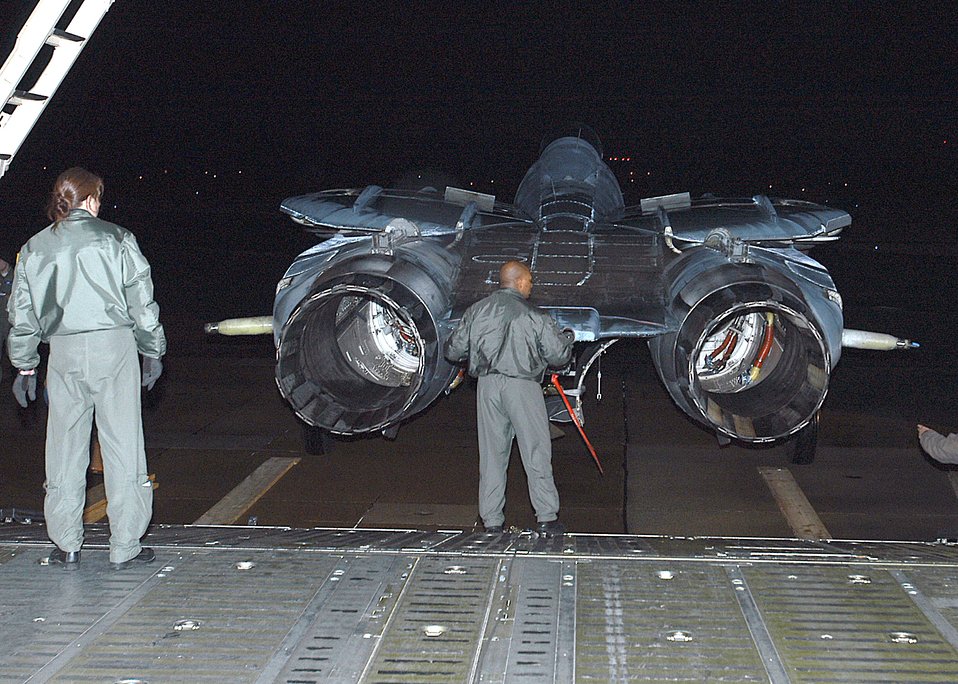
The C-5 gets the call...

Master Sgt. Brenda Kremer stands by as Master Sgt. Bernard London performs a final check of a Navy F-14 Tomcat Feb. 6 before it is loaded into a C-5 Galaxy at Naval Air Station Oceana in Virginia Beach, Va. The fighter is being transported to an aviation museum in Fort Worth, Texas. The C-5 and aircrew are from the Air Force Reserve Command's 512th Airlift Wing at Dover Air Force Base, Del.